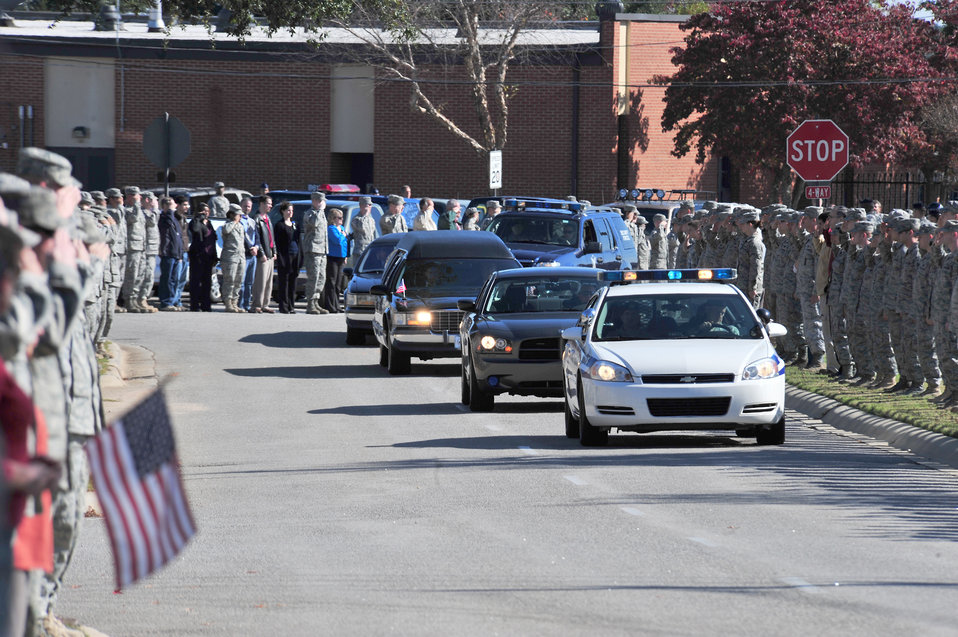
Fallen Airman honored

Thousands of servicemembers lined the streets to pay their last respects to a fallen Airman Nov. 18, 2010, at Shaw Air Force Base, S.C. . Staff Sgt. Andrew Bubacz, a native of Dalzell, S.C., died Nov. 12, 2010, while deployed to Nuristan, Afghanistan on a provincial reconstruction team. Sergeant Bubacz was a 97th Communications Squadron at Altus Air Force Base, Okla.